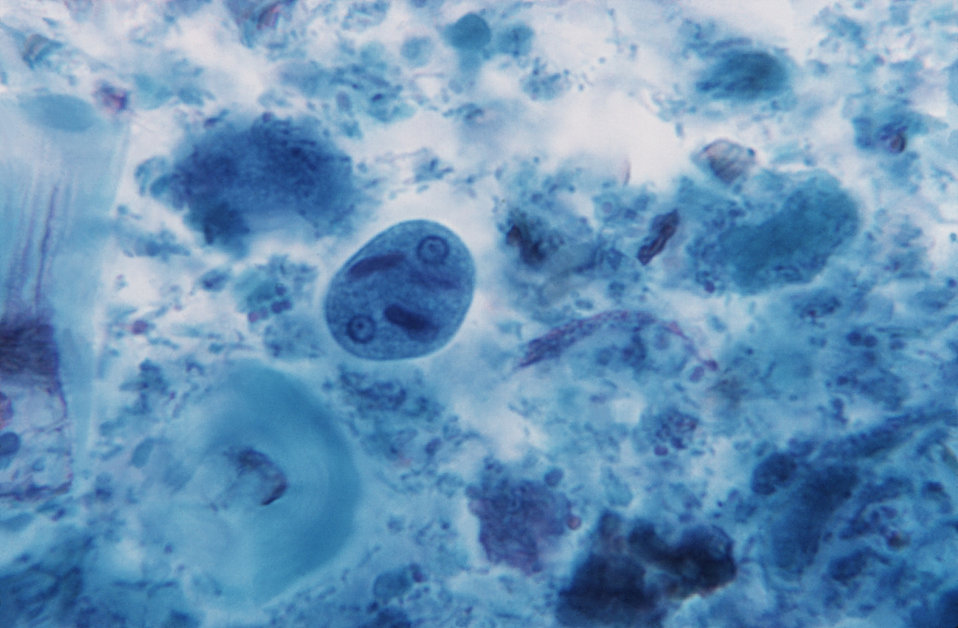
Entamoeba histolytica cyst.